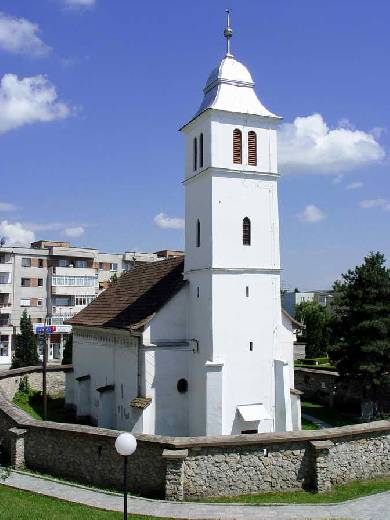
Română: Biserica Reformata Câmpia Turzii